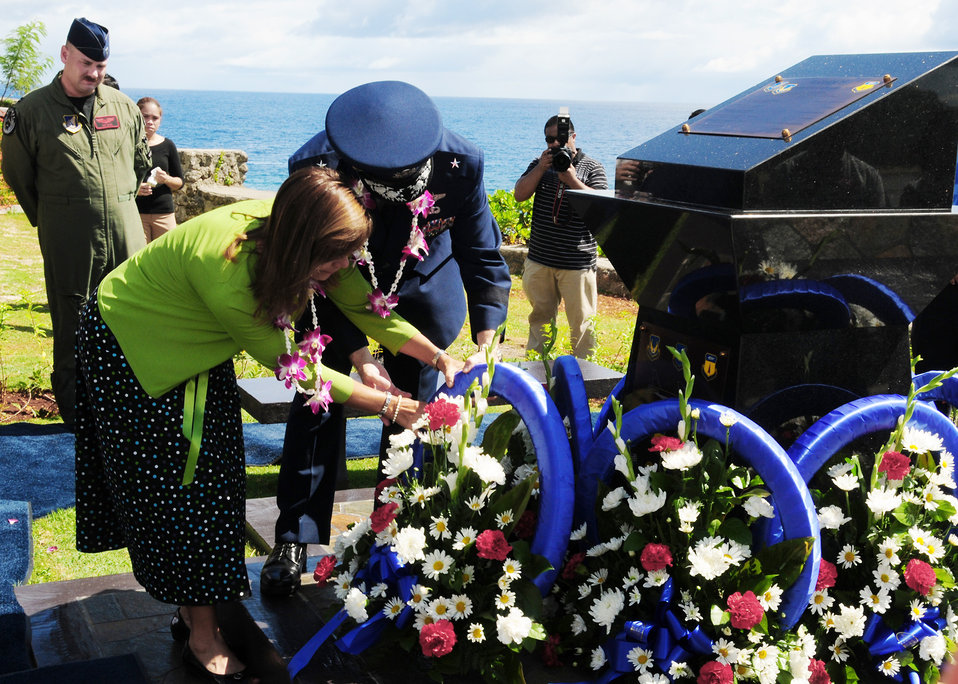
RAIDR 21 memorial

Brig. Gen. Phil Ruhlman, commander of the 36th Wing at Andersen Air Force Base, Guam, and wife Lina Ruhlman lay a wreath at the base of the RAIDR 21 Monument at the Governor's Complex at Adelup Point in Hagatna, Guam, July 20. They placed the wreath in remembrance of the six Airmen who were lost July 21, 2008, when a B-52 Stratofortress -- call sign RAIDR 21 -- crashed off the coast of Guam during a mission. More than 300 family, friends and guests attended the ceremony and monument unveiling.